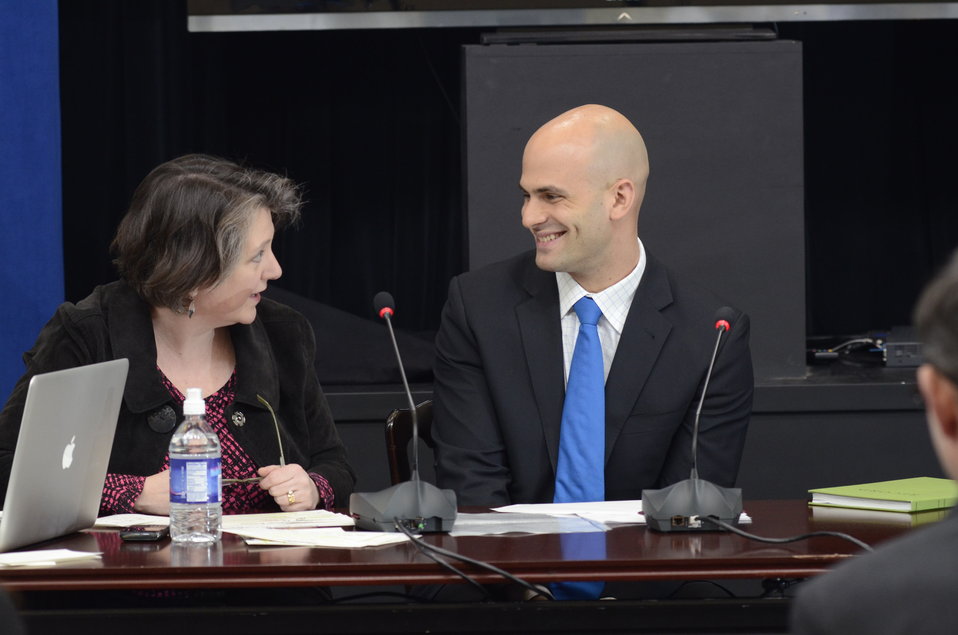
Agriculture Deputy Secretary Kathleen Merrigan (left) and White House Personal Chef and Food Policy Advisor Sam Kass (right) during a Know Your Farmer Compass event that used twitter social media to continue the National Conversation on Local and Regional Food projects and how they offer economic opportunities to local farmers, ranchers and food entrepreneurs. The virtual conversation broadcasted via twitter from the White House, in Washington, D.C., on Monday, March 5, 2012.